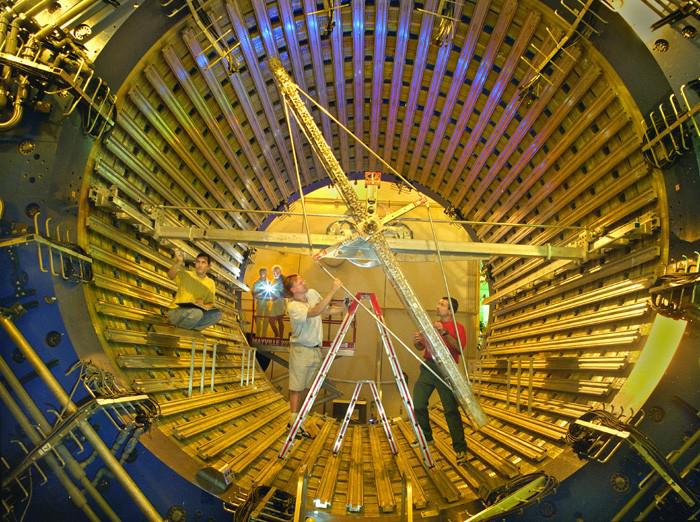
THE STAR DETECTOR AT BROOKHAVEN'S RELATIVISTIC HEAVY ION COLLIDER (RHIC).

THE STAR DETECTOR, ONE OF FOUR AT THE RELATIVISTIC HEAVY ION COLLIDER, TRACKS AND ANALYZES THE THOUSANDS OF PARTICLES THAT MAY BE PRODUCED BY EACH GOLD ION COLLISION INSIDE THE DETECTOR. THE FIRST COLLISION TOOK PLACE ON JUNE 12, 2000, CONTRIBUTING TO THE FURTHER UNDERSTANDING OF THE FUNDAMENTAL NATURE OF MATTER.